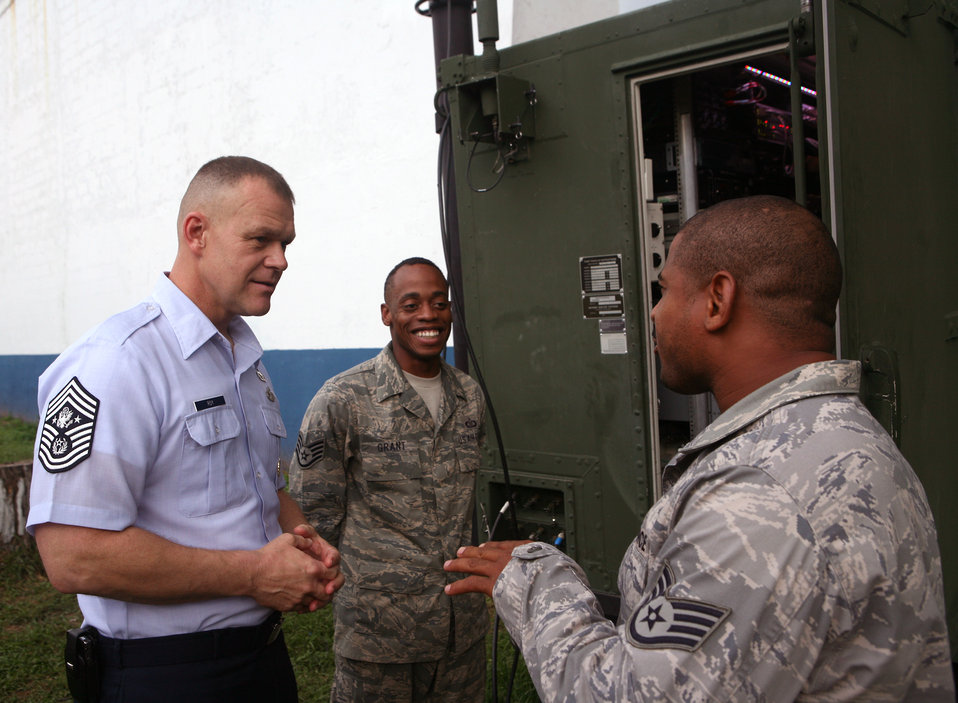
CMSAF visits exercise participants on Navy ship

Chief Master Sgt. of the Air Force James A. Roy speaks to Staff Sgt. Leighton Grant (center) and Staff Sgt. Rodney Hawkins during a visit with Airmen of the 612th Air Expeditionary Communications Squadron deployed at Capt.Juan Delgado Air Base during Fuerzas Aliadas PANAMAX 2009 Sept. 19, 2009, in Panama City, Panama. The exercise is a multinational exercise with 20 participating countries tailored to the defense of the Panama Canal, involving more than 4,500 personnel from the U. S. Southern Command area of focus.